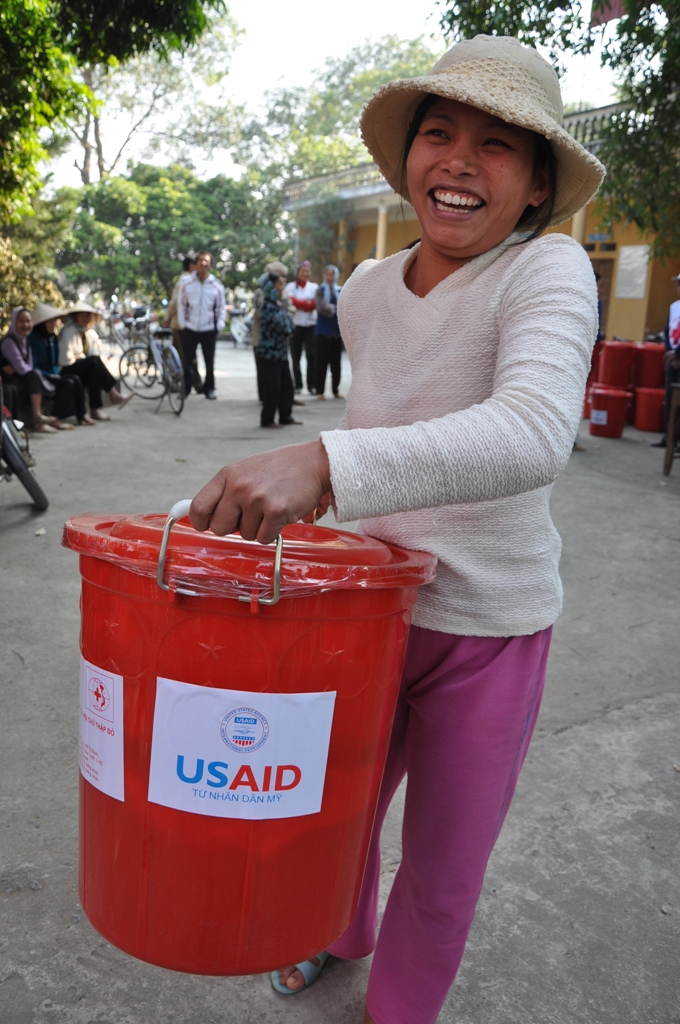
USAID provides humanitarian assistance in Vietnam

Thian Thi Ngoi of Lien Chau District in Vietnam receives assistance after flooding.